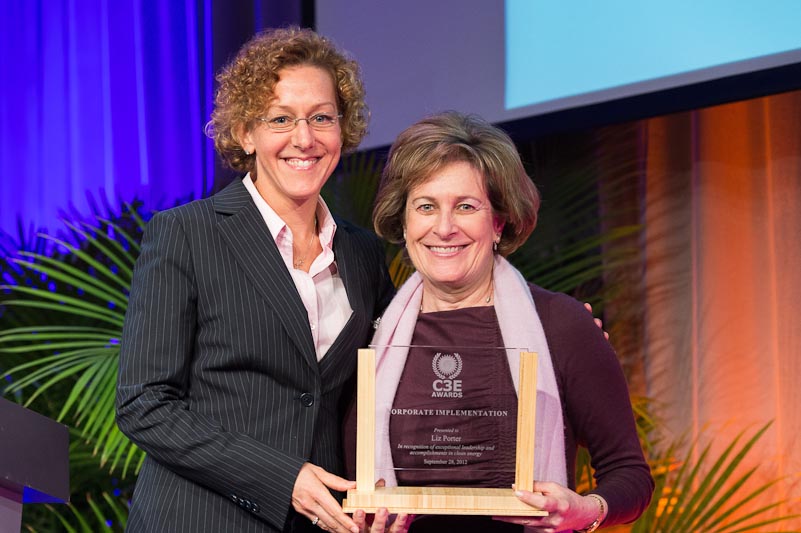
Liz Porter

C3E Award Winner, Corporate Implementation